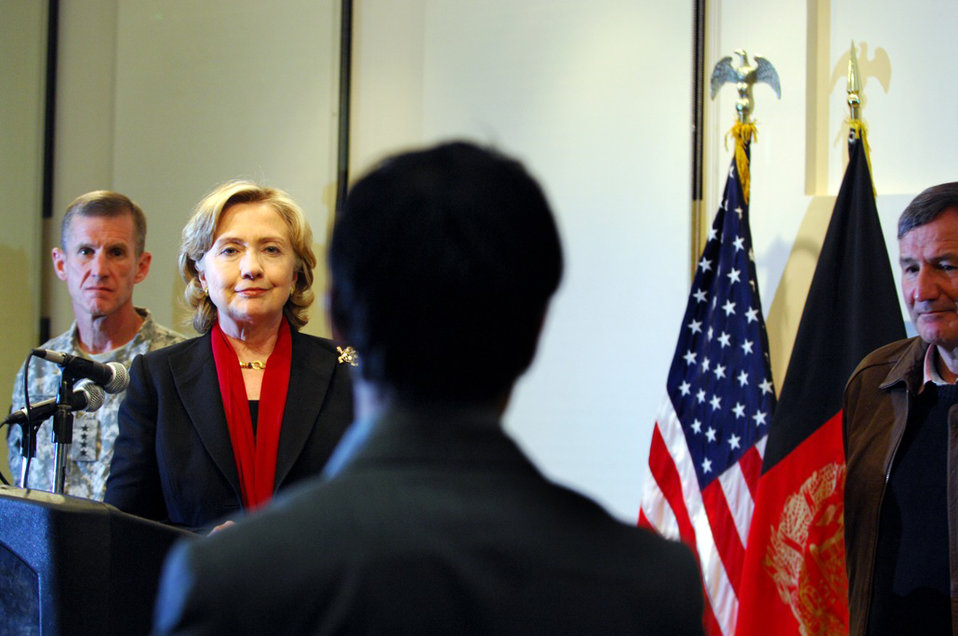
Secretary Clinton Travels to Afghanistan

U.S. Secretary of State Hillary Rodham Clinton holds a press conference at the U.S. Embassy in Kabul, Afghanistan November 19, 2009. Secretary Clinton traveled to Afghanistan to attend President Hamid Karzai's November 19, 2009 inauguration ceremony, meet with Afghanistan's leadership, international partners and allies, U.S. troops, staff in Provincial Reconstruction Teams, and Embassy staff.